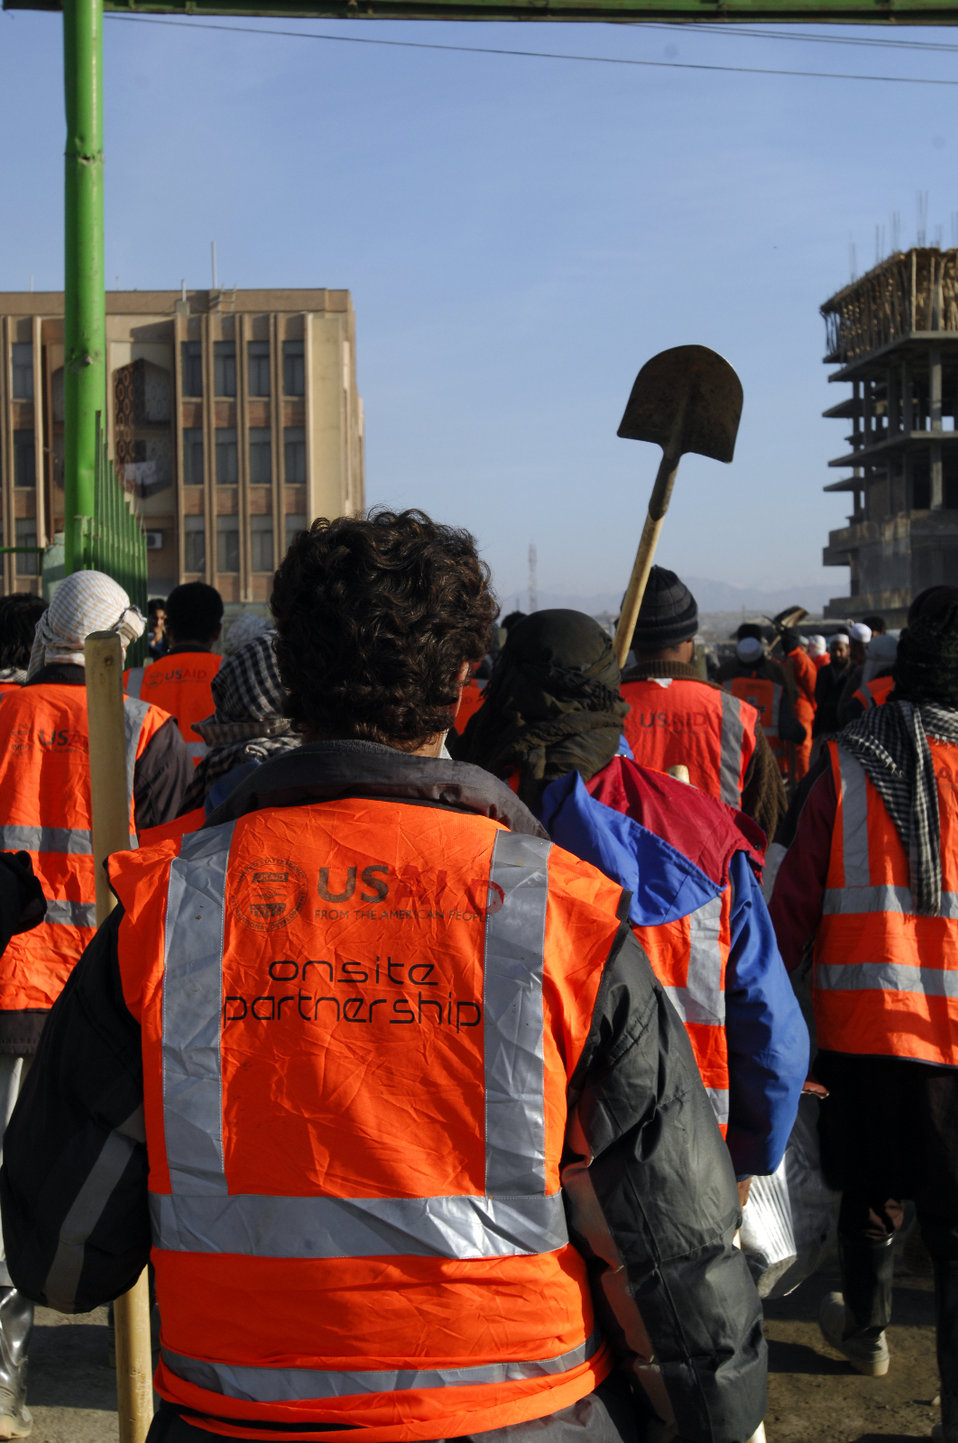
Care56